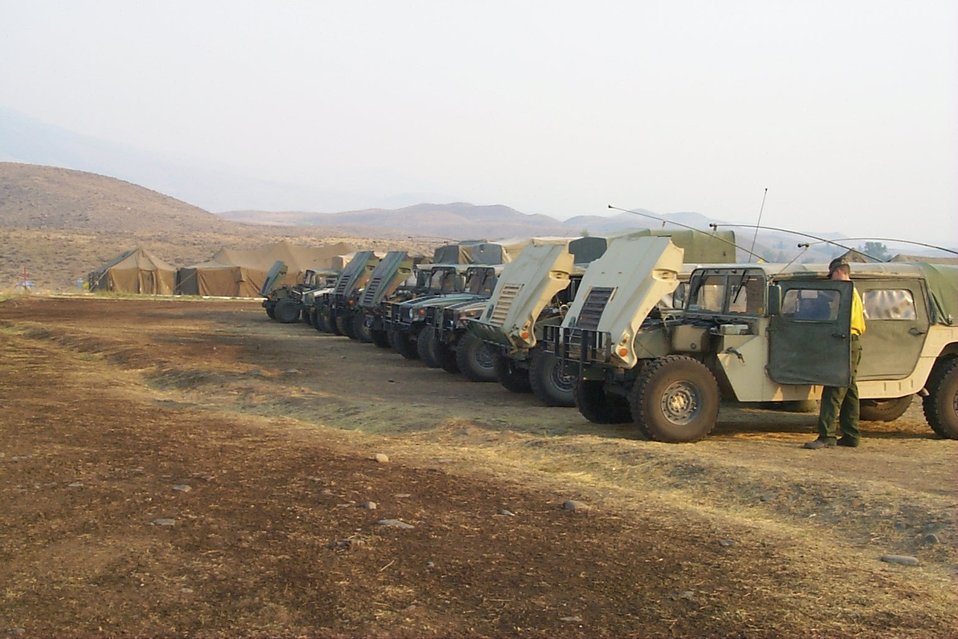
Humvees at camp Fire Clearwater Fire Salmon Field Office USRD Upper Snake River District